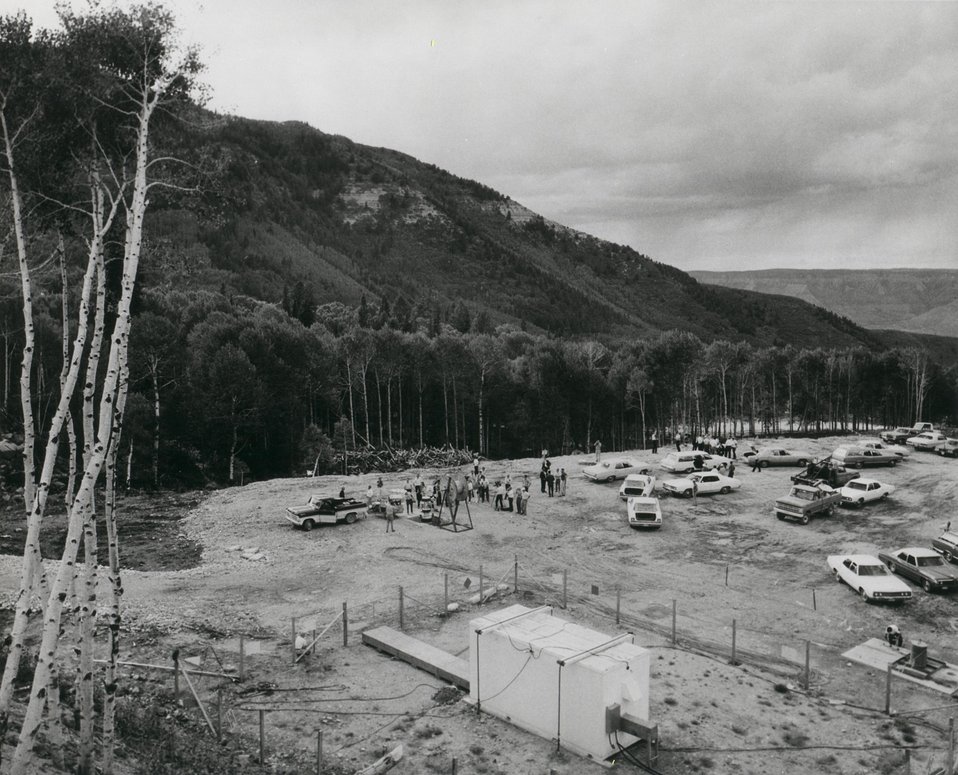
General view of the western Colorado site of Project Rulison, the second Plowshare natural gas simulation experiment before the detonation of September 10, 1969. Circa 1969.